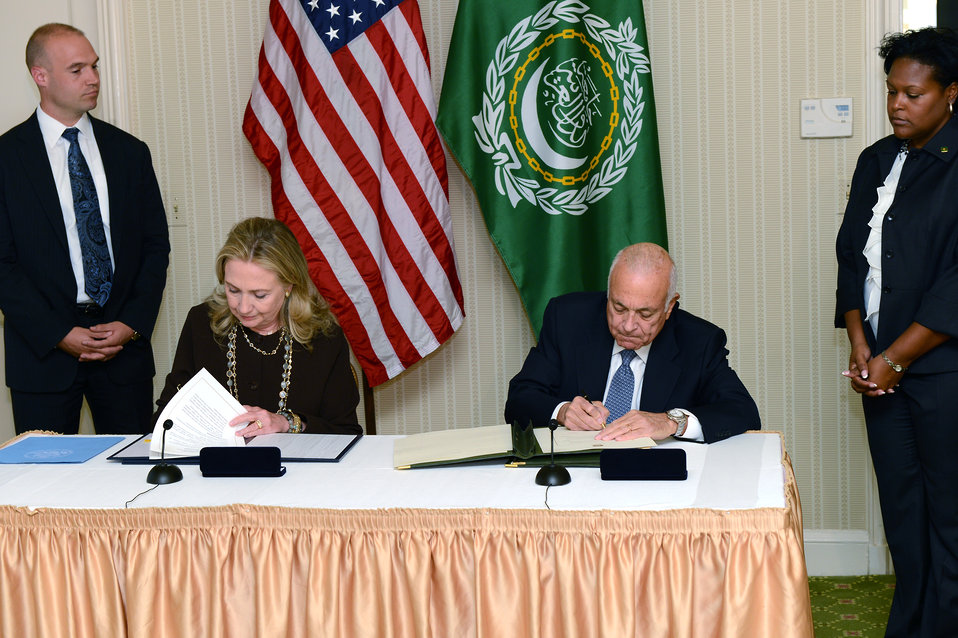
Secretary Clinton Meets With Arab League Secretary General Elaraby

U.S. Secretary of State Hillary Rodham Clinton meets with Arab League Secretary General Nabil Elaraby in New York, New York on September 25, 2012.